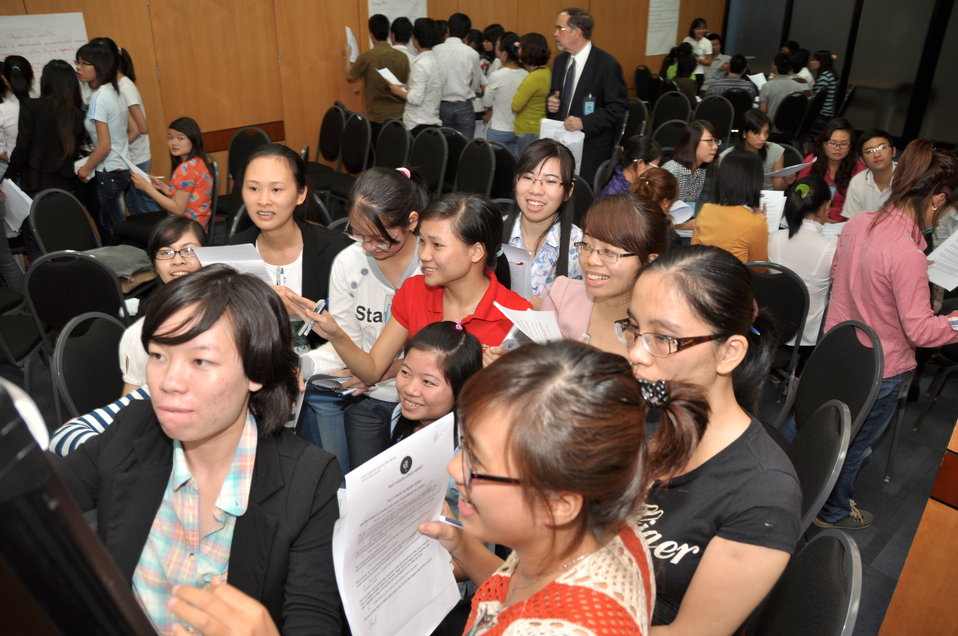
Vietnamese university students join the Business Plan Mashup exercise

Photo: @USAIDVietnam, November 16, 2012